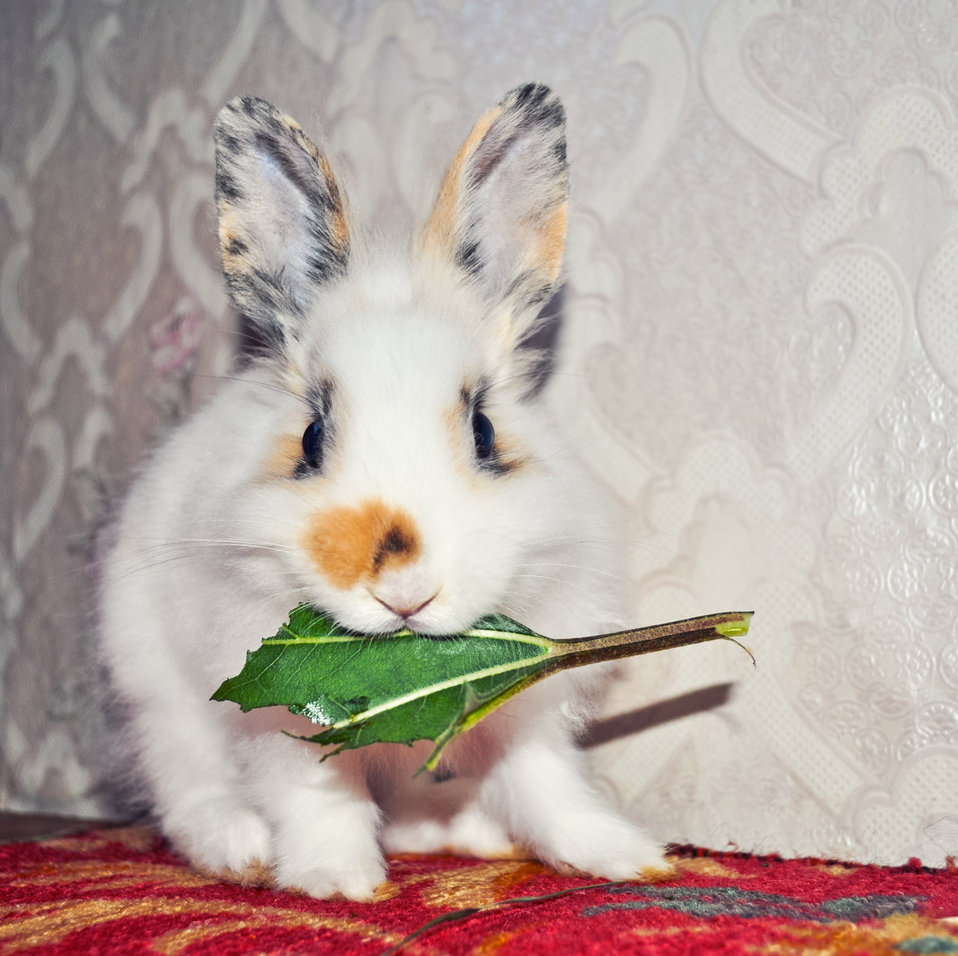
A small rabbit

Little rabbit eating grass.